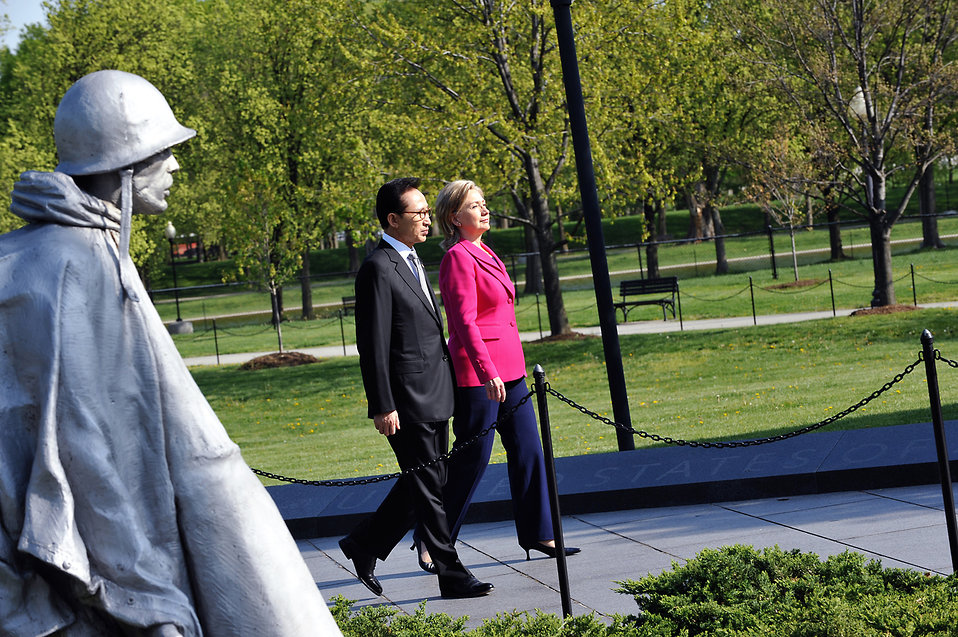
Secretary Clinton Marks 60th Anniversary of the Korean War

U.S. Secretary of State Hillary Rodham Clinton participates in a wreath laying ceremony with Korean President Lee Myung-bak on the 60th Anniversary of the Korean War, at the Korean War Memorial in Washington, DC April 12, 2010.